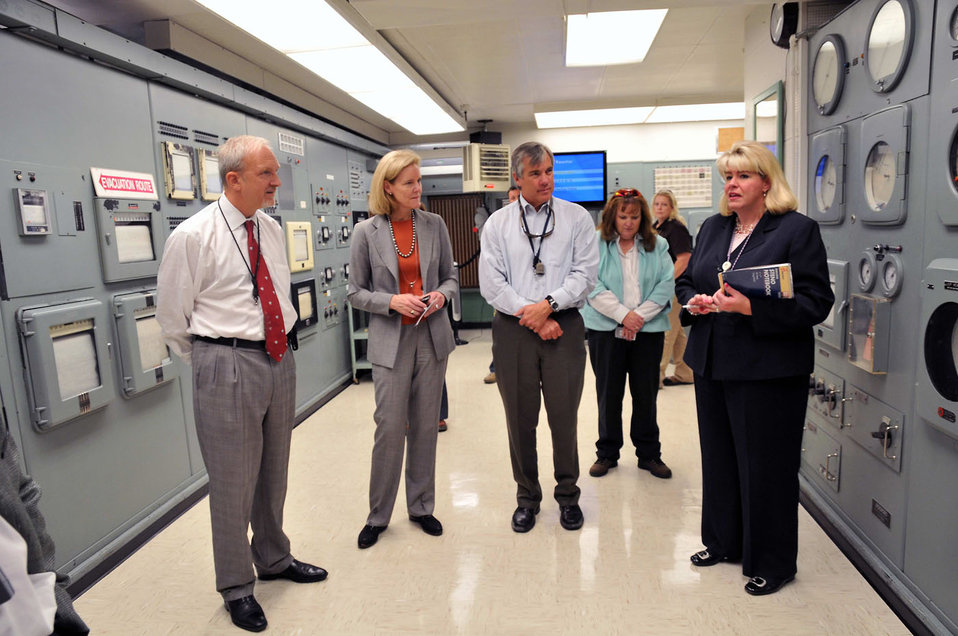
B Reactor National Historic Landmark

EM Senior Advisor David Huizenga, left, and EM Principal Deputy Assistant Secretary Tracy Mustin, second from left, toured the B Reactor National Historic Landmark at the Hanford site in August 2011 with Richland Operations Office Manager Matt McCormick, third from left, and Richland Operations Office Asset Revitalization Program Manager Colleen French. Huizenga and Mustin were among nearly 8,000 visitors to the B Reactor that year.